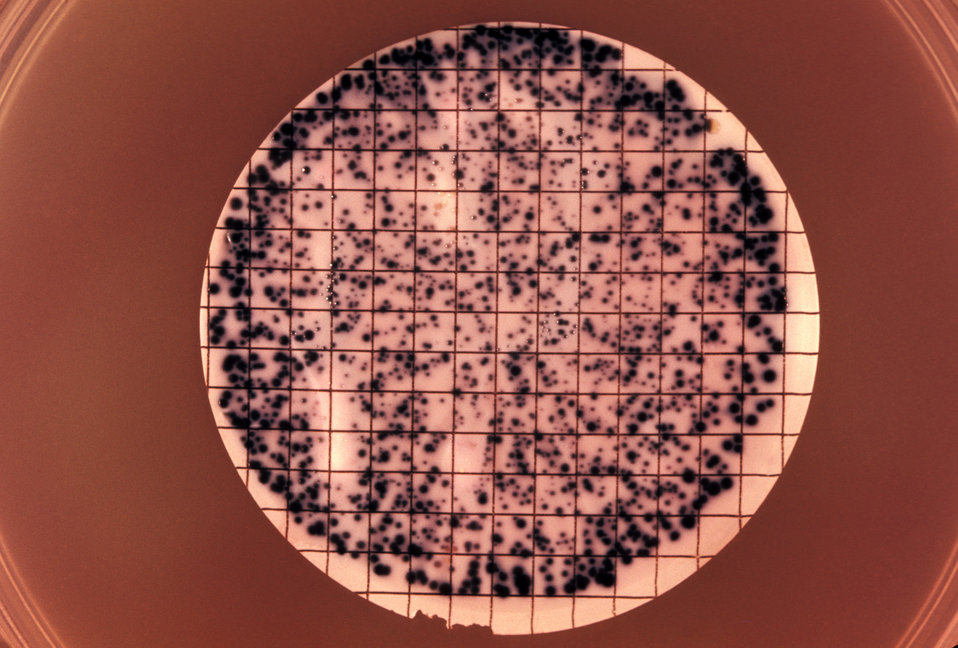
Note the presence of bacterial colonies grown from a urine specimen taken for a differential diagnostic test for gonorrhea.